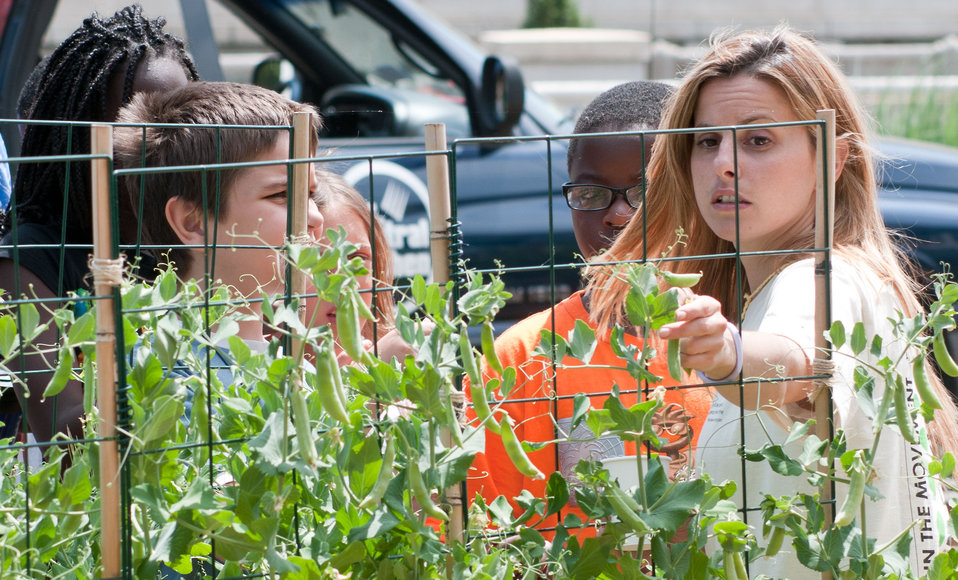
U.S. Department of Agriculture (USDA) Education Outreach Specialist Annie Ceccarini (right) picks a pea pod from a vine show students from E.L. Haynes School in Washington, DC during the opening day of the USDA Farmers Market and the official kick off of the People's Garden Friday on Friday, June 3, 2011 in Washington, DC. The USDA Farmers Market is located at the corner of 12th Street and Independence Avenue and will be open every Friday from 10:00 a.m. - 2:00 p.m. through November 18th. Special events will be happening every Friday at the market and at the People's Garden all season.